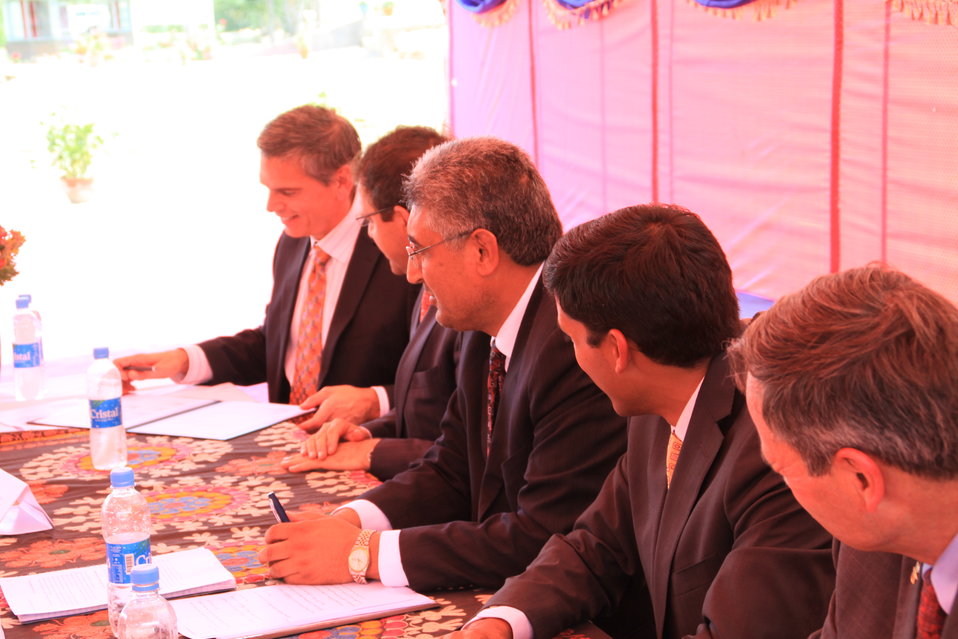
Badam Bagh Farm